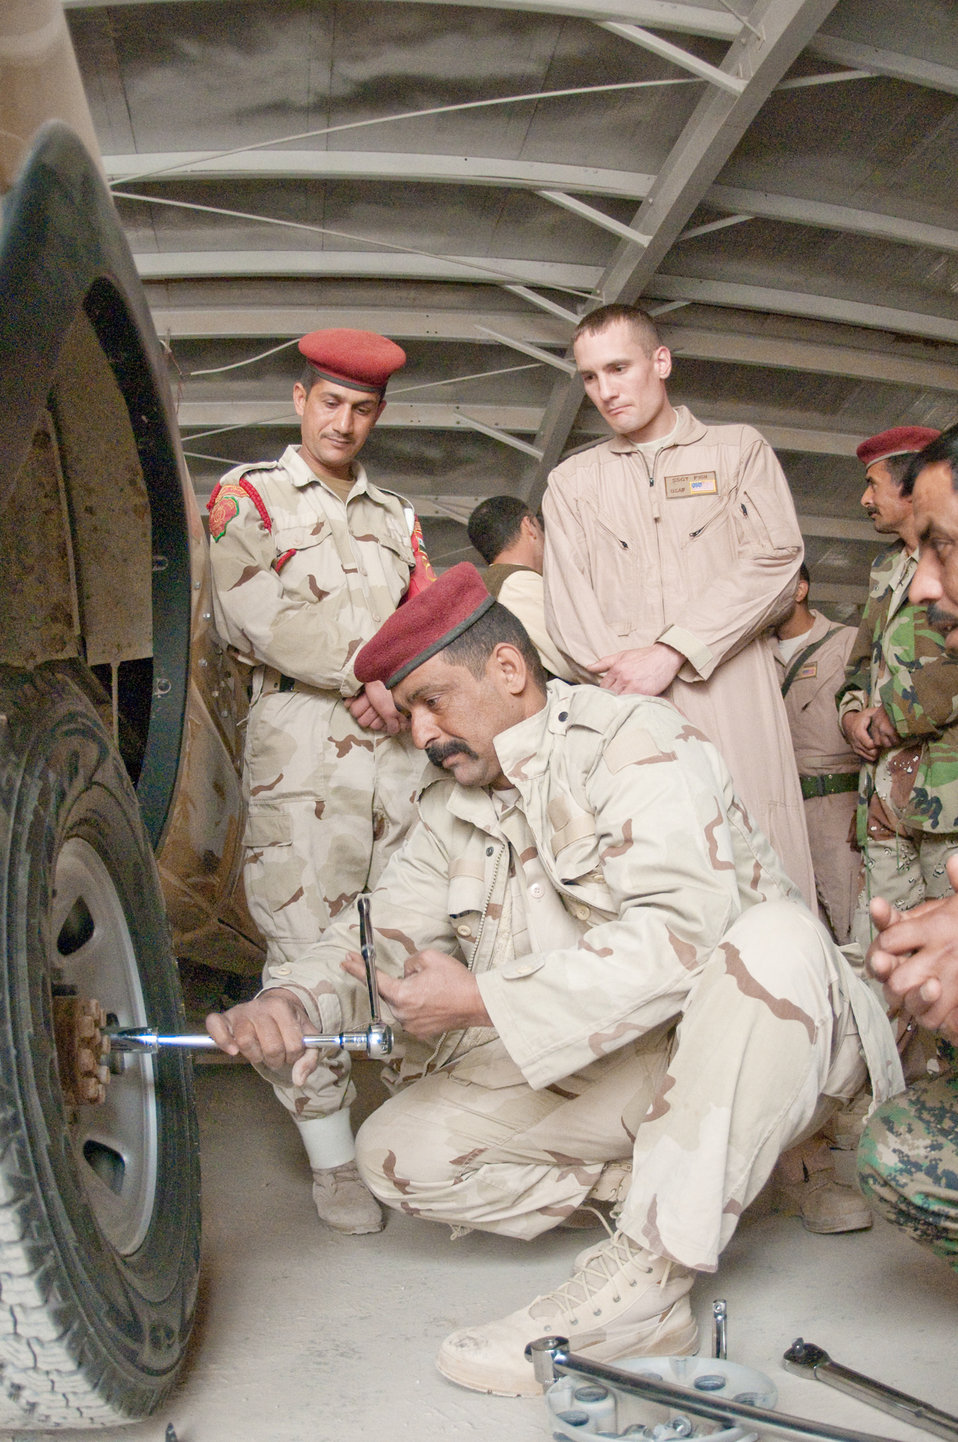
Coalition forces team up for vehicle training

Staff Sgt. Giles Fish observes Iraqi army members change a tire during a training course given by the Logistics Military Advisory Team Feb. 22, 2010, at Camp Ur, Iraq. Sergeant Fish is assigned to the 407th Expeditionary Logistics Readiness Squadron at Ali Base, Iraq. He is deployed from Little Rock Air Force Base, Ark.